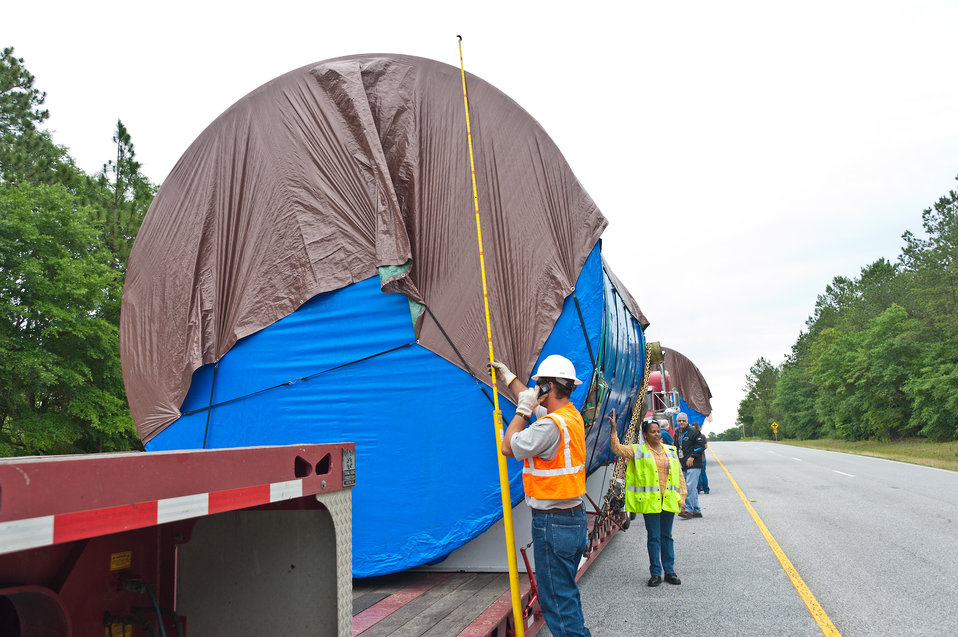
SRS Processing Tanks

The first 10 large nuclear material processing tanks arrives at the Savannah River Site (SRS) in mid-May 2012 for installation in the site’s Salt Waste Processing Facility, signifying a key milestone in the construction of this major cleanup facility designed to treat 33 million gallons of salt waste currently stored in underground tanks at SRS.